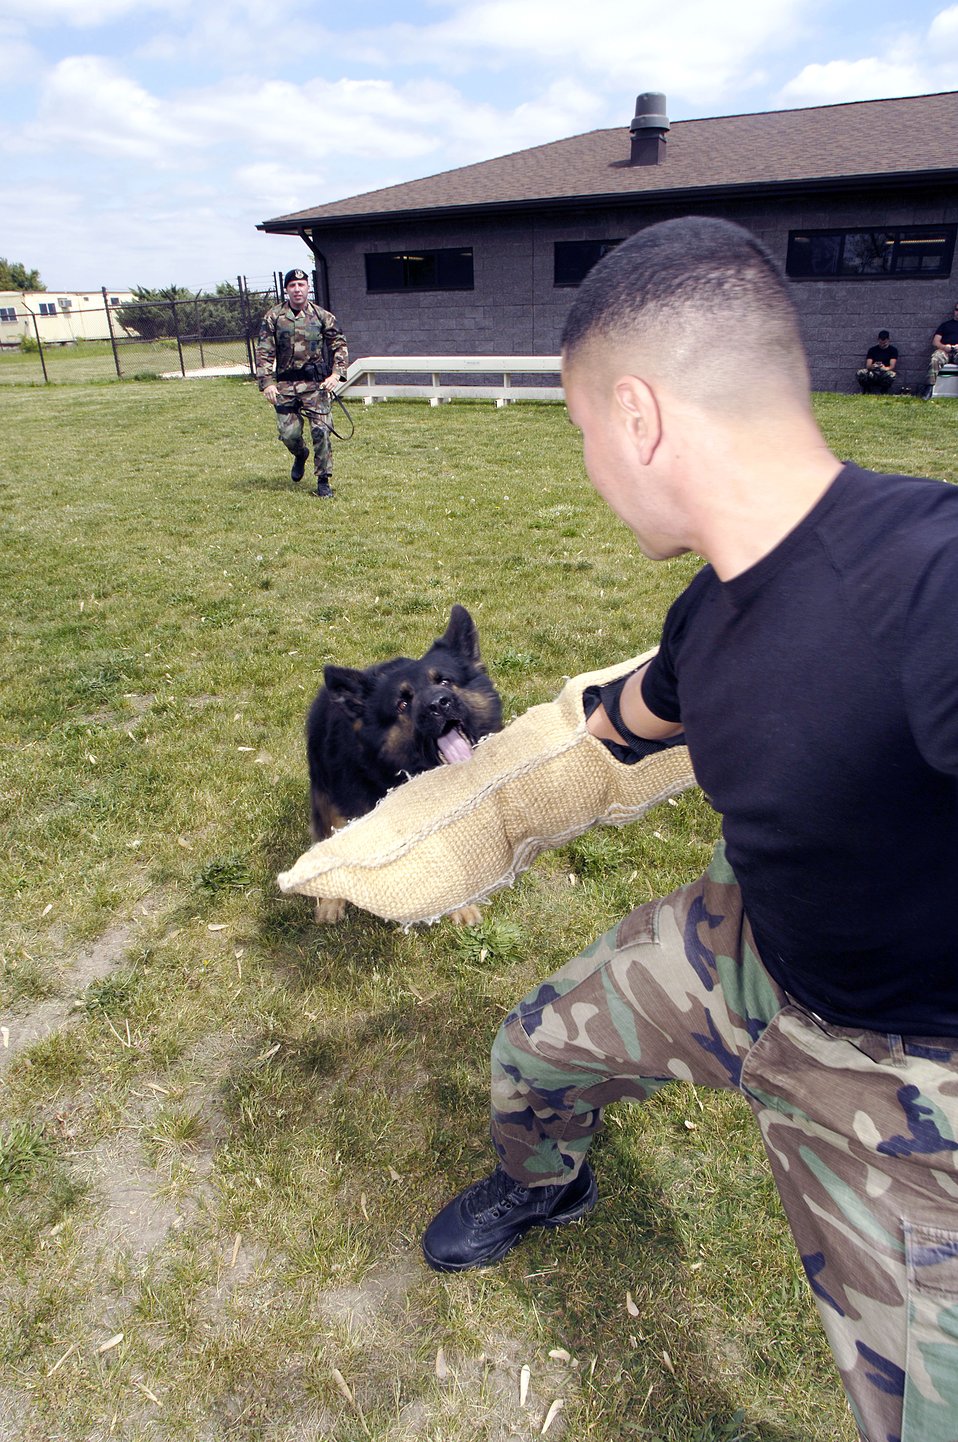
Military working dog trains hard

Staff Sgt. Stephen Upton (rear) releases Cezar to